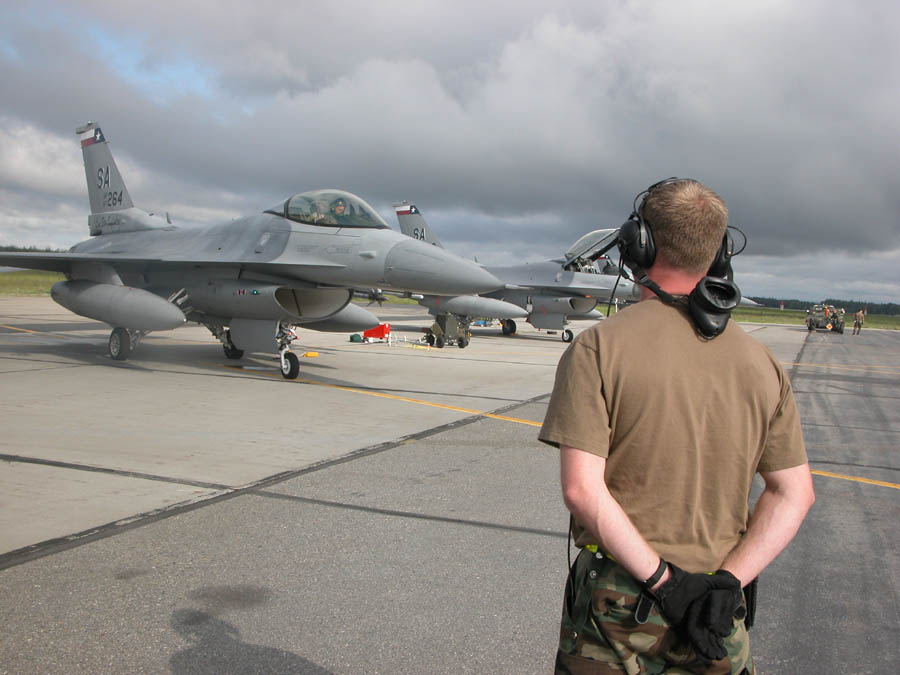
Maintainers keep 'Thunder' rolling

EIELSON AIR FORCE BASE, Alaska -- A crew chief with the Texas Air National Guard's 149th Fighter Wing waits patiently on the flightline here to send off a an F-16 Fighting Falcon on a morning mission during Cooperative Cope Thunder. The wing is among several Air Force units participating in the exercise. Other countries with participating units include Japan, Germany, Singapore, Australia, Sri Lanka, Mongolia, Thailand, Bangladesh, South Korea and the United Kingdom.